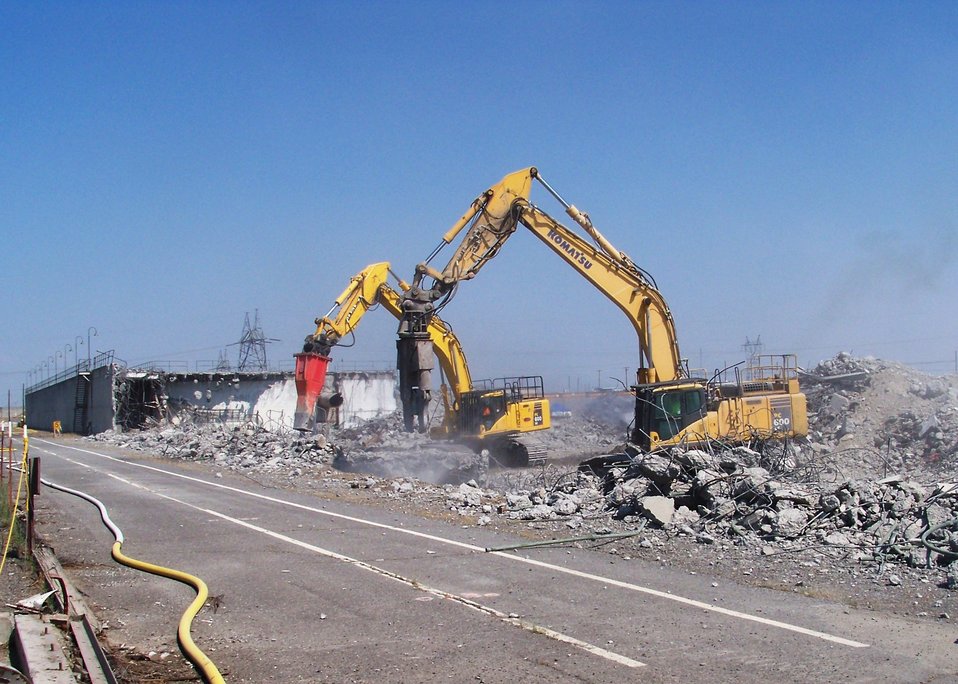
Hanford Recovery Act Workers Tear Down Facilities, Expand Groundwater Treatment in 2010